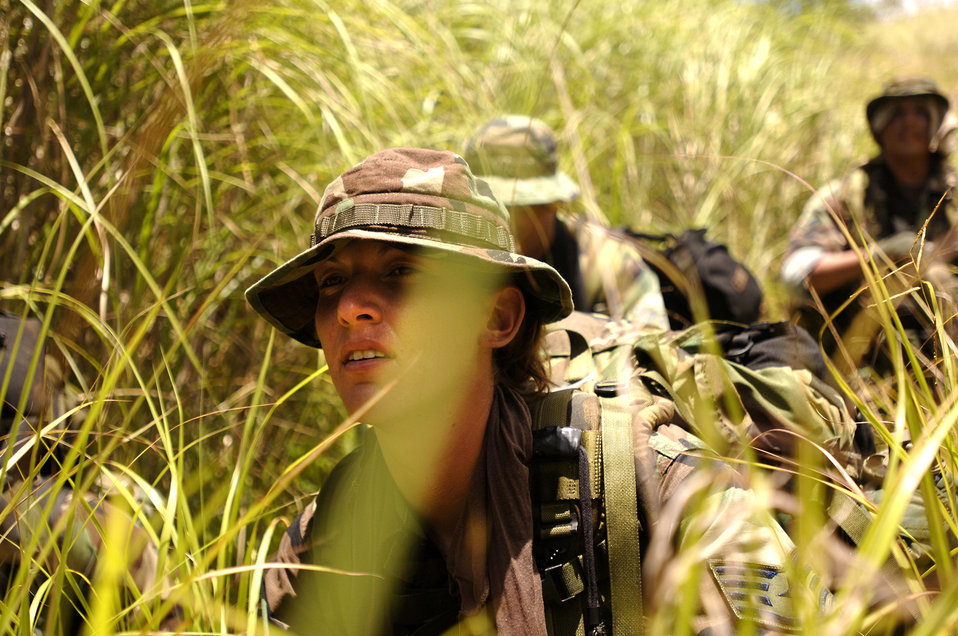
Tracking

NAVAL BASE GUAM -- Staff Sgt. Heather Baylis and other Security Forces personnel embark on a tracking exercise throughout the jungles and mountains of Guam during a special response team training course here. The specialized course provides intense physical conditioning along with building clearing, land navigation, special weapons, and close combat training. Sergeant Baylis is assigned to the 613th Contingency Response Group at nearby Andersen Air Force Base.